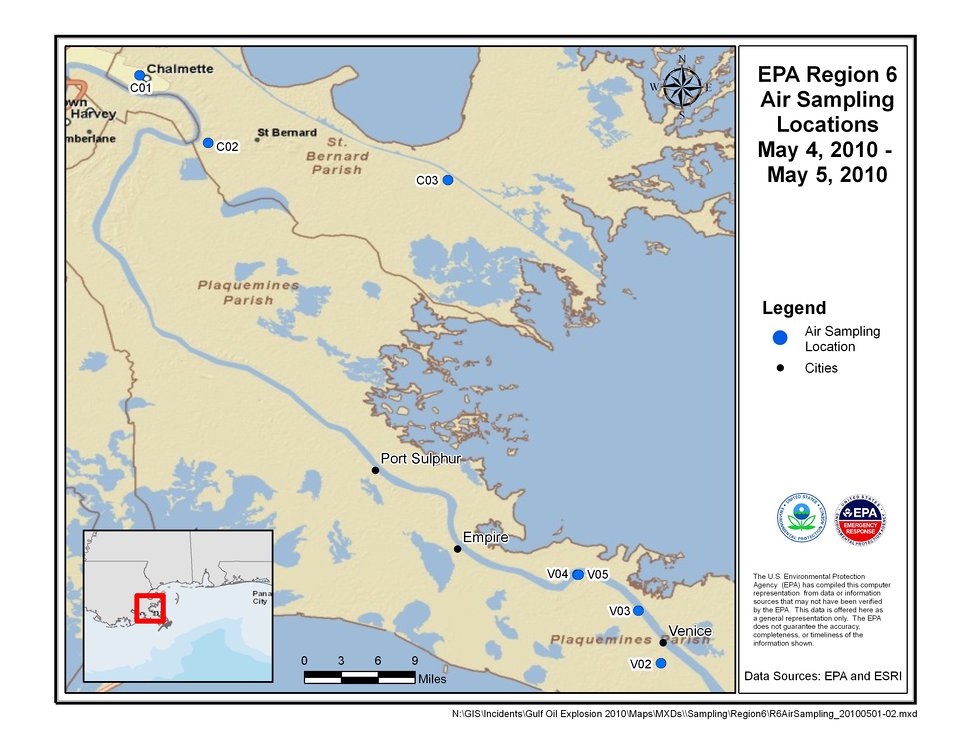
EPA Air Sampling Locations May 4-5, 2010